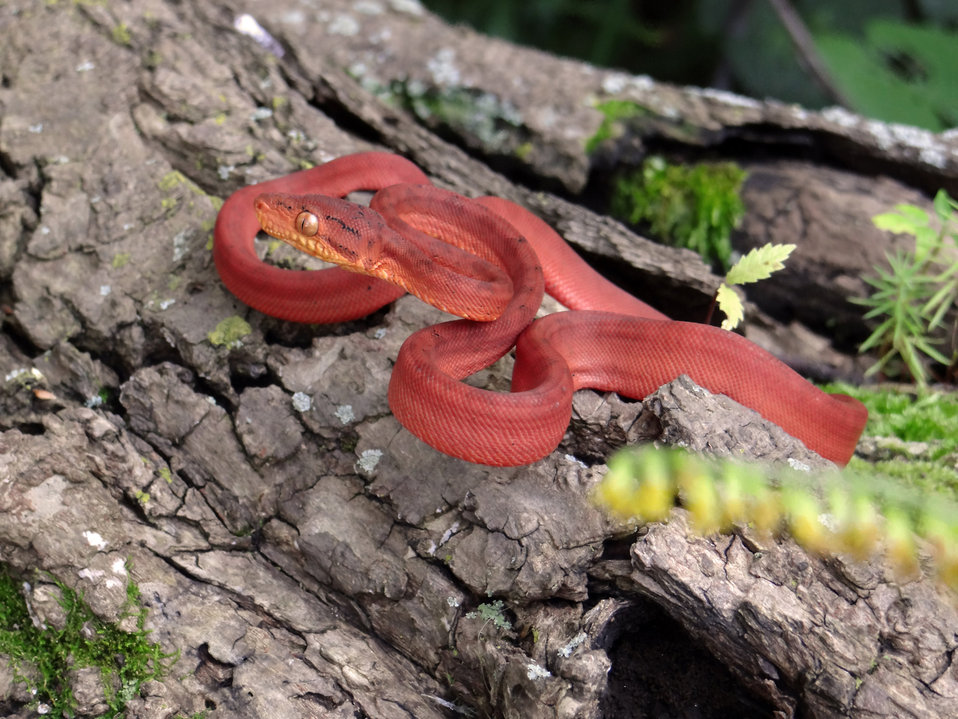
Planning to escape...

A close up photo of an amazon tree boa snake..